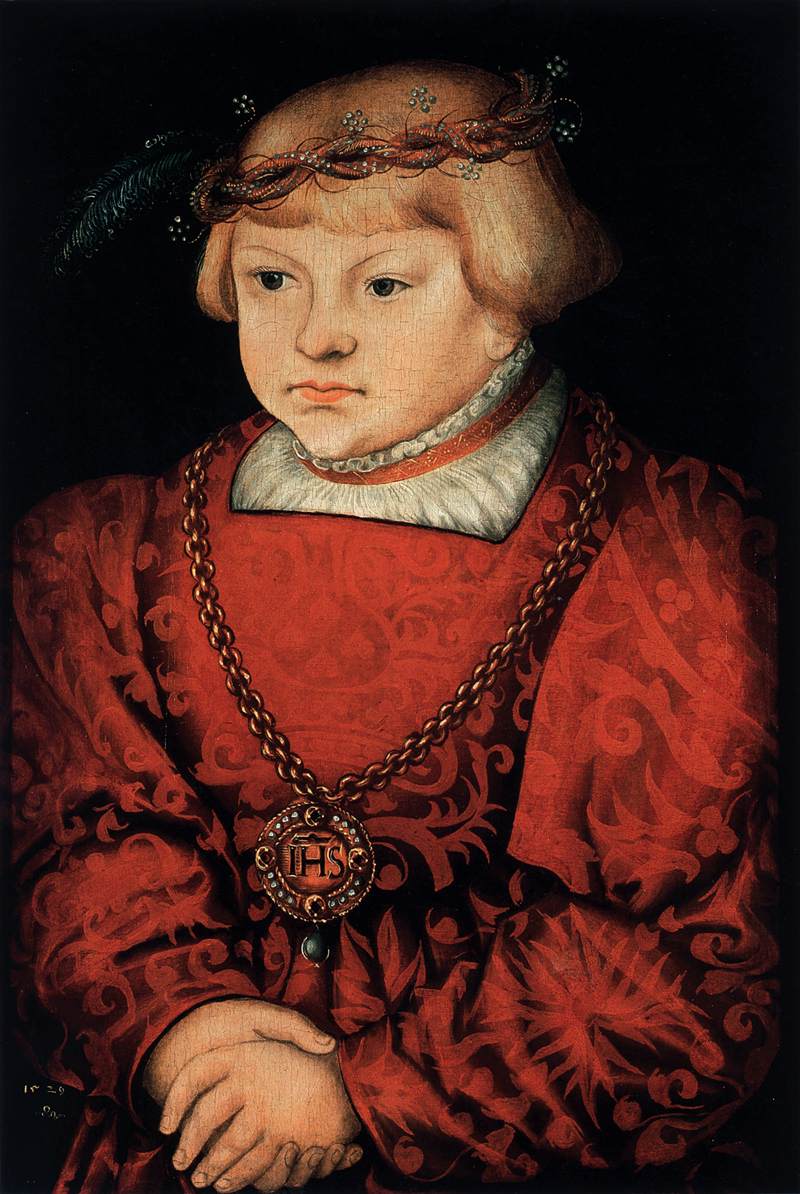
Lucas Cranach d.Ä. - Bildnis eines sächsischen Prinzen (1529)